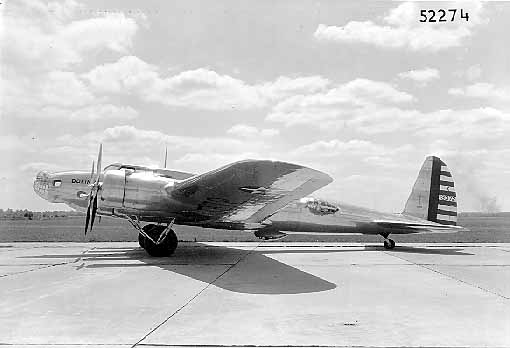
Boeing Model 299

The 299 was the prototype of the B-17 Flying Fortress, probably the most significant air weapon of its time.